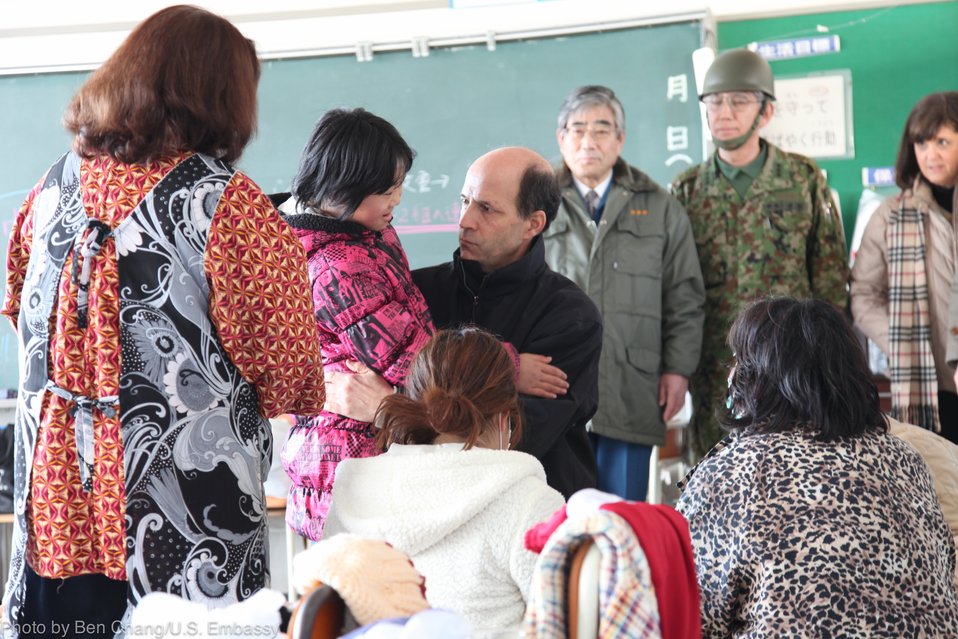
Ambassador Roos Visits Disaster Victims

U.S. Ambassador to Japan John Roos visits disaster victims at an emergency shelter in Ishinomaki, near Sendai, Japan, on March 23, 2011.